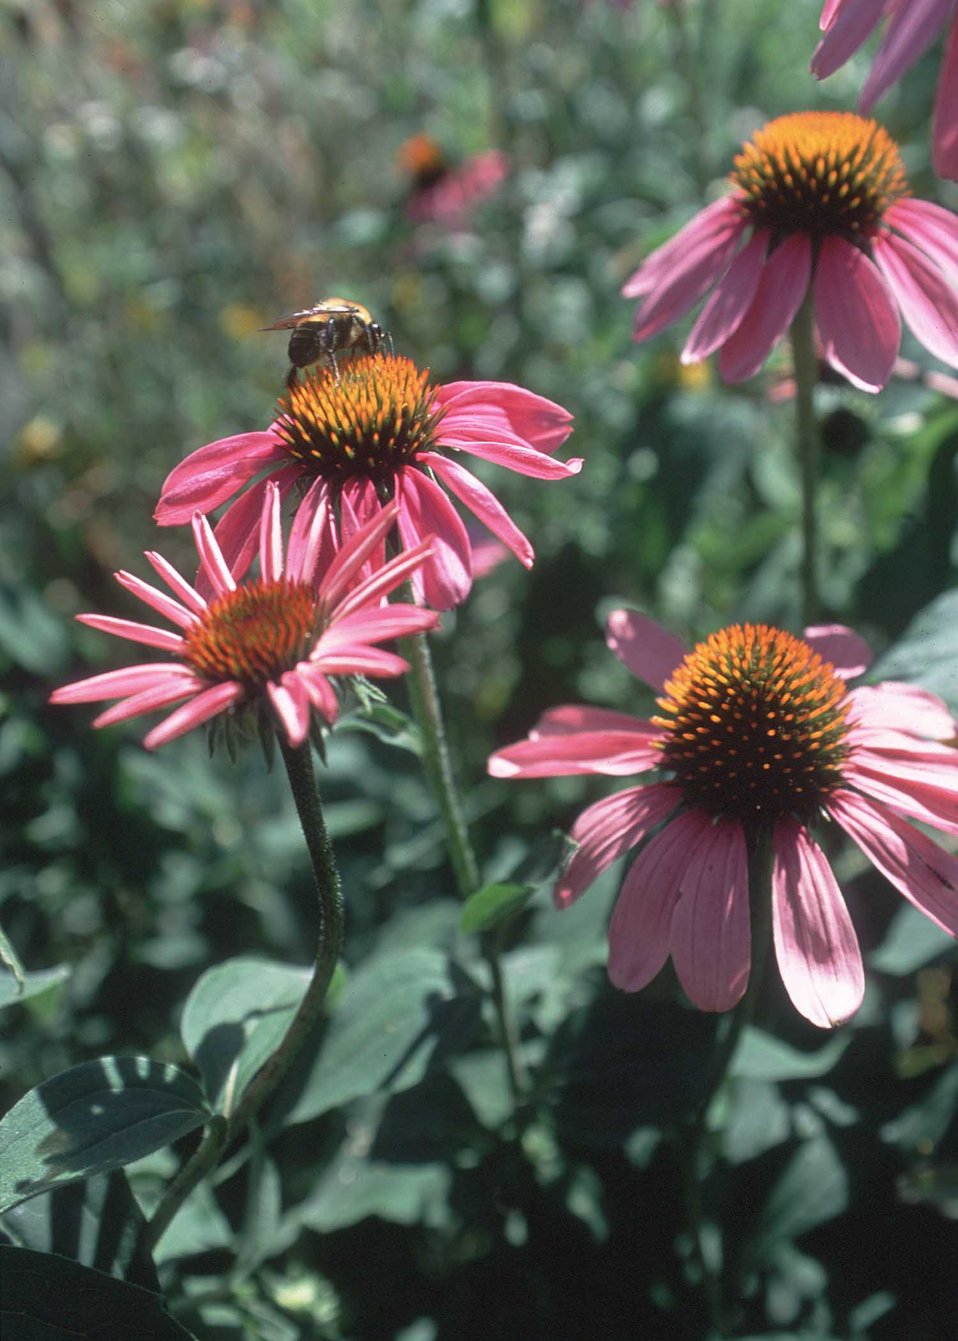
Bumblebee pollinating a native forb in a prairie planting.